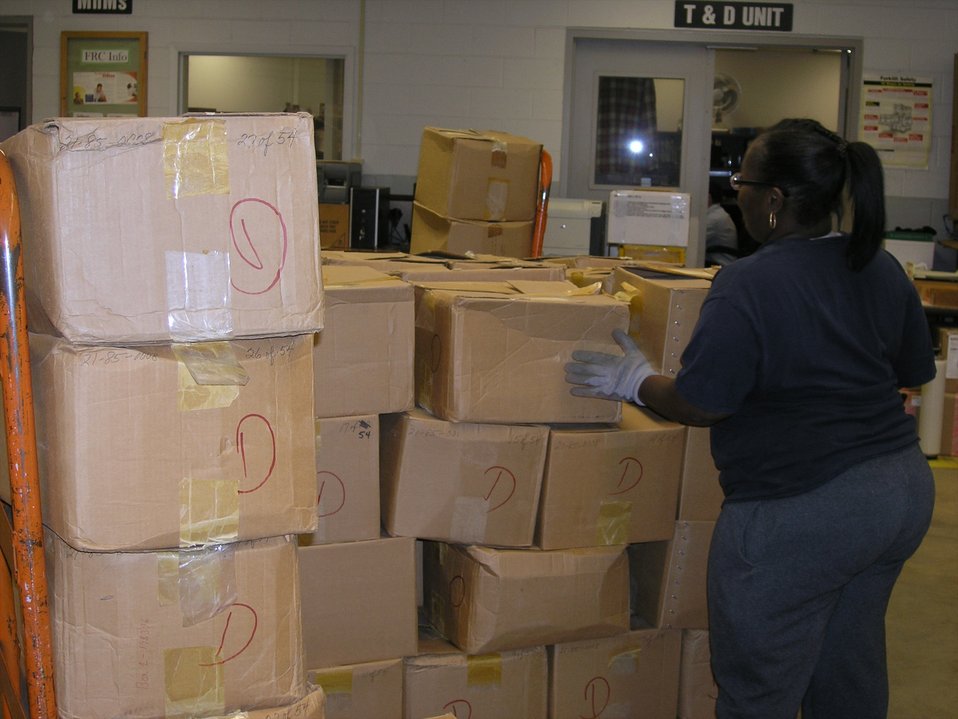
Sunarra Davis stacking disposal in the Federal Records Center process area; Location: Chicago Federal Records Center, Chicago, IL